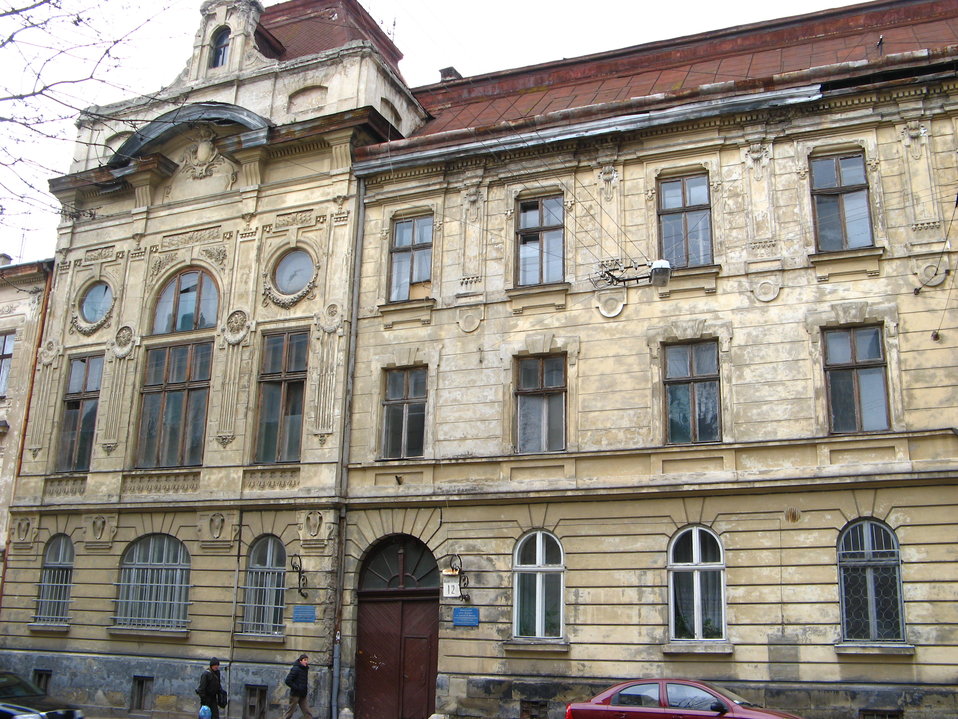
Українська: 12, Шолом-Алейхема вул. (Львів)